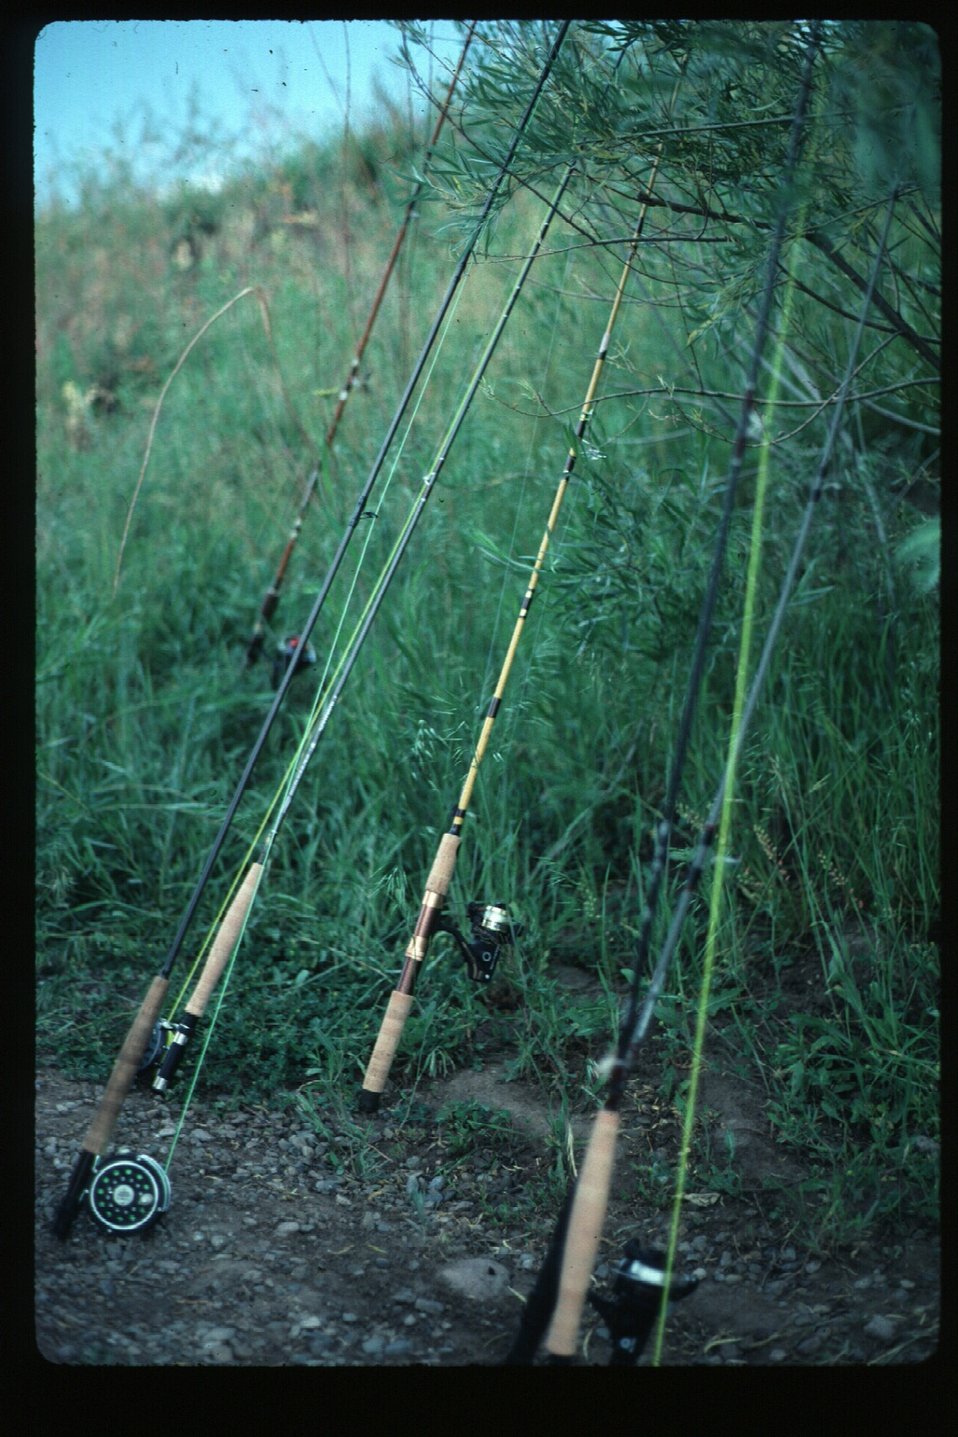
Fly Fishing poles South Fork of Snake River USRD Upper Snake River District